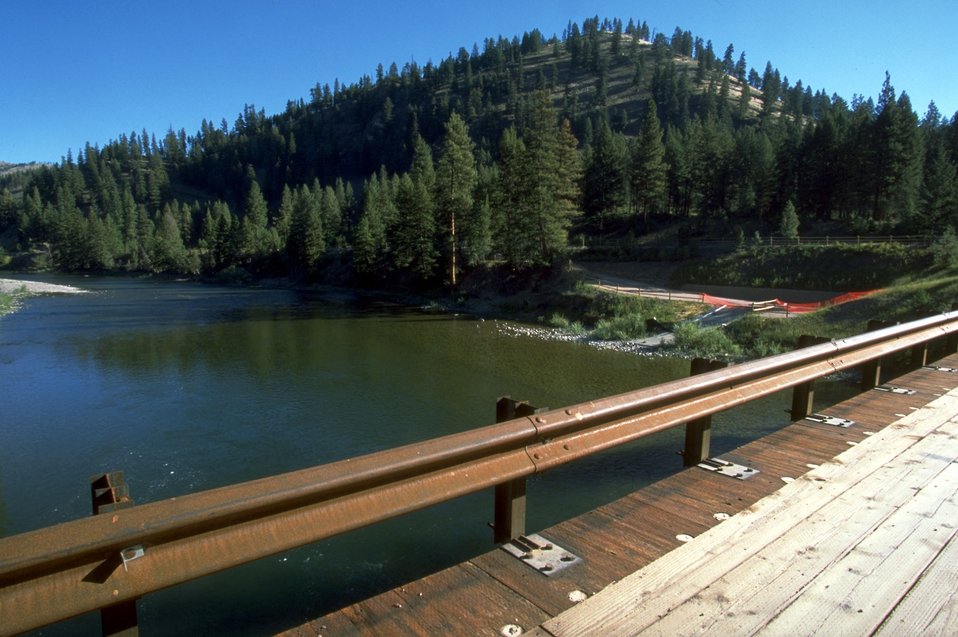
Whitaker Bridge across Blackfoot River